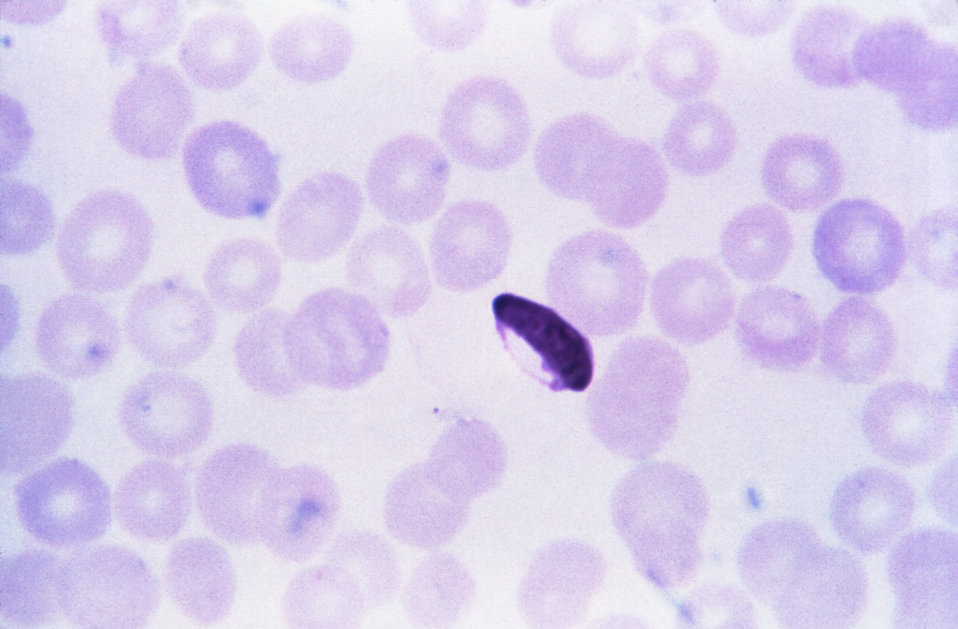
This thin film Giemsa stained micrograph reveals a Plasmodium falciparum microgametocyte.